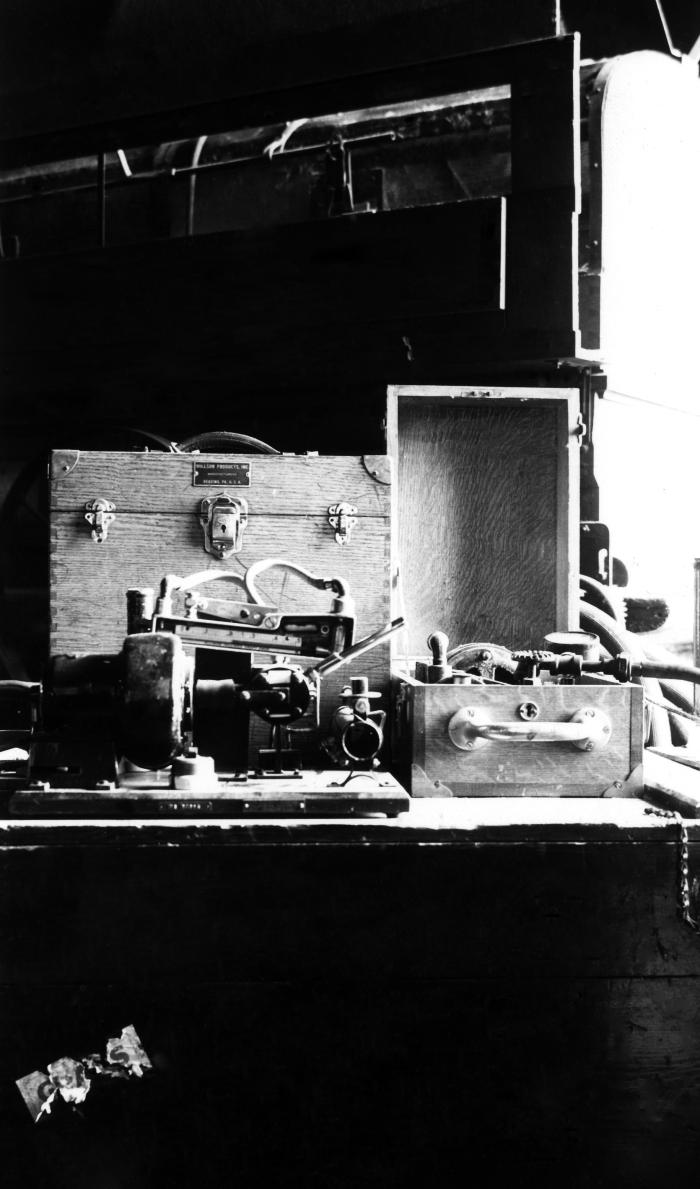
This historical image was provided by the Center for Disease Control's (CDC), National Institute for Occupational Safety and Health (NIOSH). The photograph depicted a grouping of industrial hygiene equipment used when air-sampling industrial atmospheric environments, in order to determine the concentrations of airborne mercury. Inhaled mercury, which enters the environment when used in the fur processing industry during what is called the 'carroting' process, can cause irreversible neurologic damage, including damage to the brain.